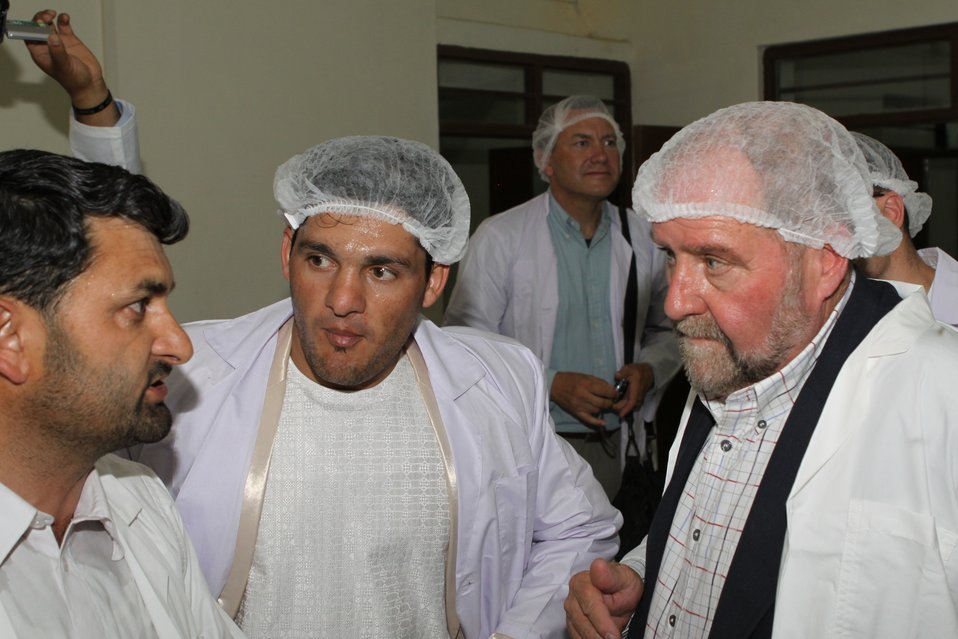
Bolan Poultry Farm